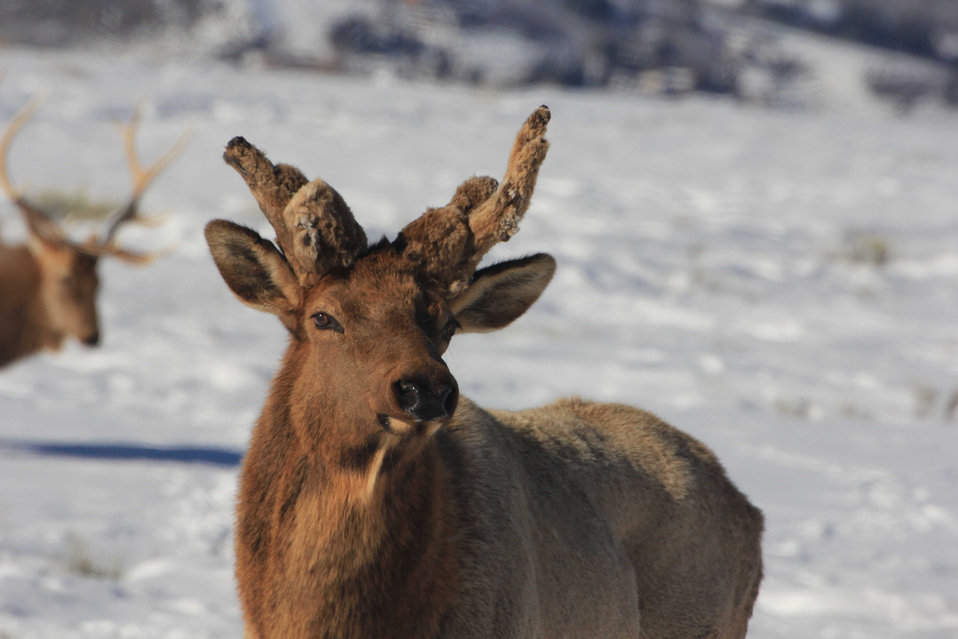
Odd for March

These stunted antlers were still in velvet in March. The oddity could be due to a number of reasons, such as an injury or a hormonal imbalance.

Credit: USFWS / Tony Hough, National Elk Refuge volunteer